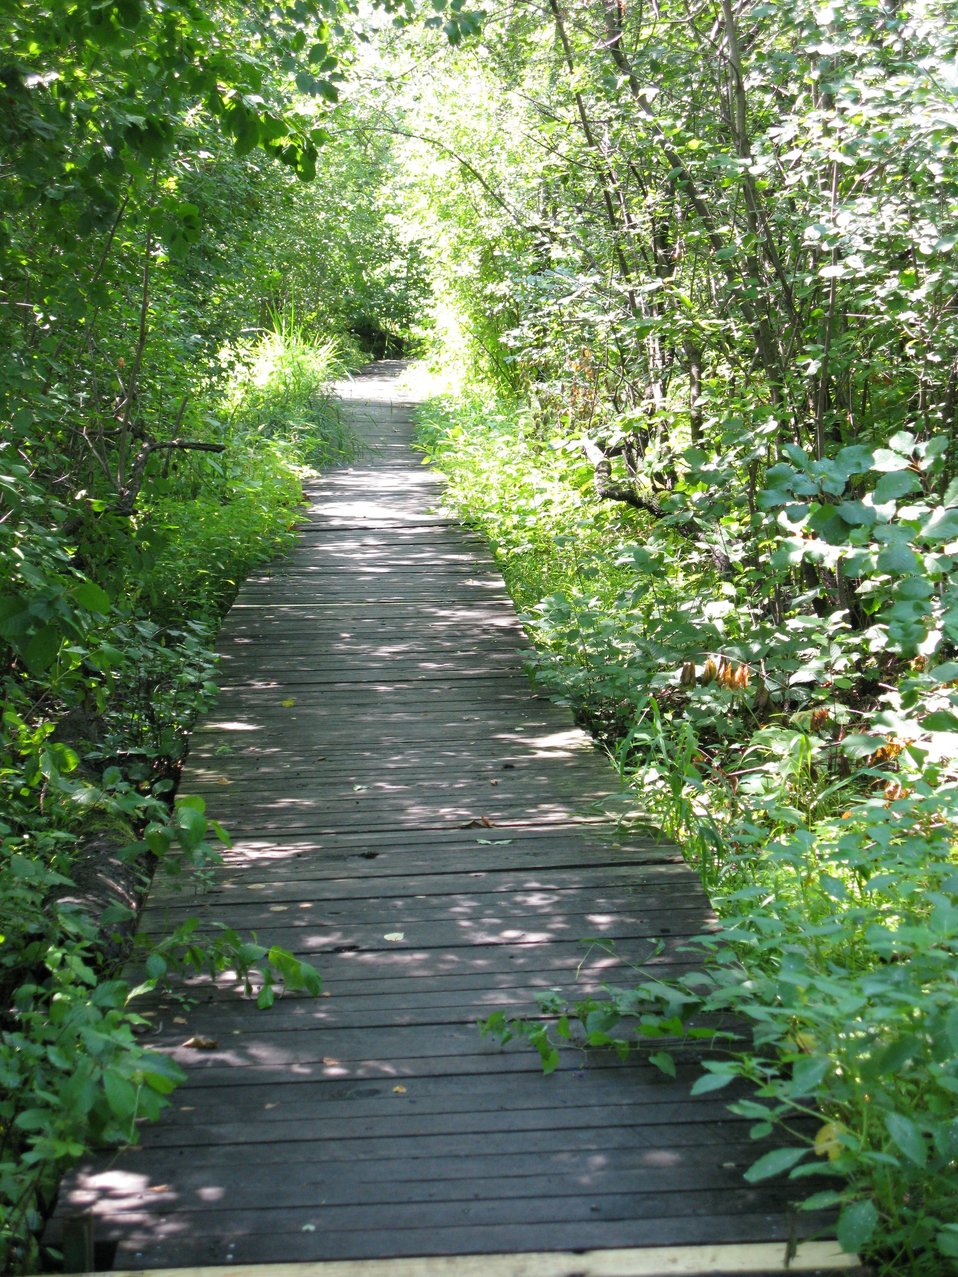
Bluff Trail, Minnesota Valley Refuge